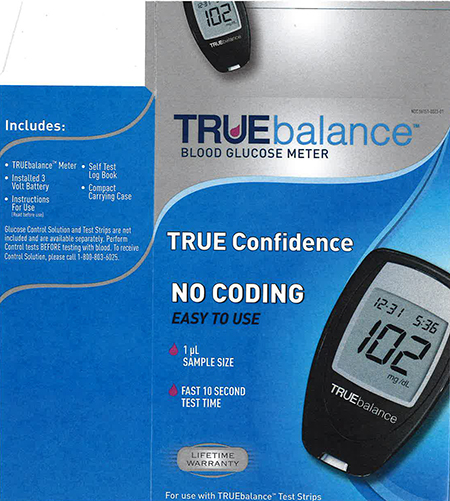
RECALLED – Blood Glucose Meters

January 2, 2014 – Product Recall – Nipro Diagnostics, Inc. Initiates Voluntary Recall of Certain TRUEbalance and TRUEtrack Blood Glucose Meters.